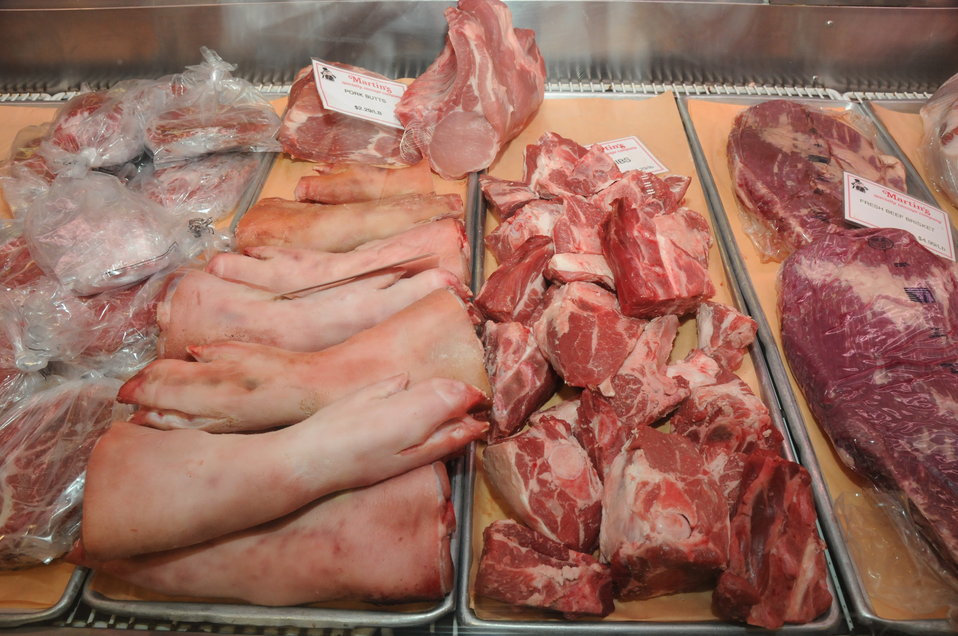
The Reading Terminal Market offers produce fresh from the field to the people of Philadelphia, PA on April 3, 2009. There are Amish specialties, fruits, vegetables, meats, seafood, and poultry. Reading Terminal Market opened for business in 1892 with approximately 78,000 square feet and almost 800 spaces for vendors. The Market was revitalized in the 1990’s and today is still the gastronomic bazaar that its original planners had envisioned. Many of the historic Market stands survived the reconstruction and are once again filled with local produce, fresh eggs, milk, meats, poultry, seafood, handmade crafts, jewelry, and clothing. The Market is home to more than 80 merchants, two of whom are descendants of the original stand holders from a century before.